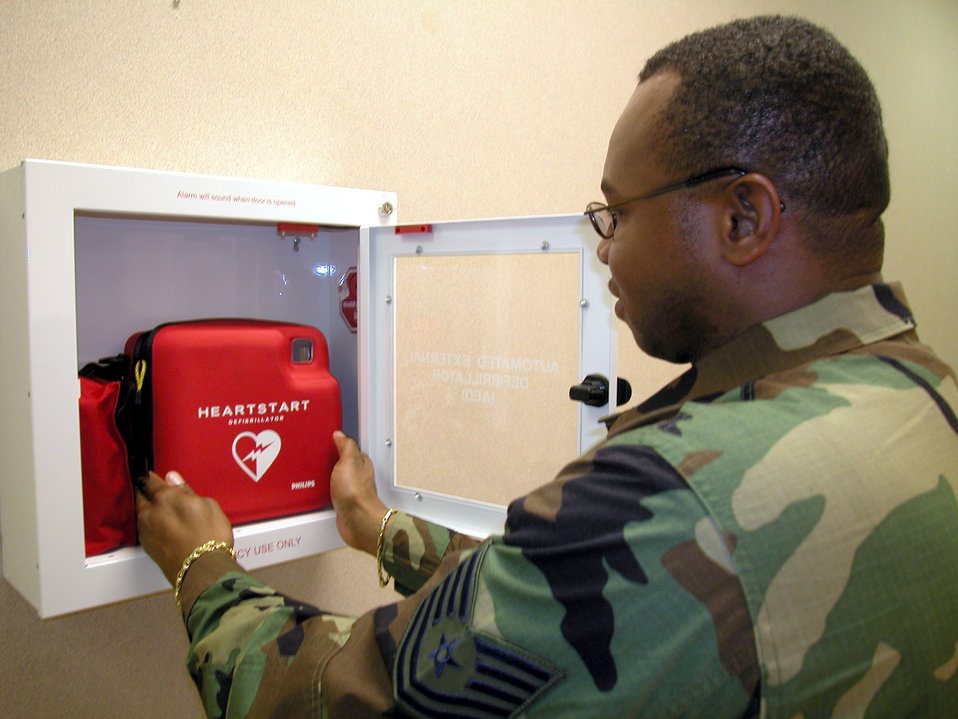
Defibrillator saves life

TINKER AIR FORCE BASE, Okla. -- Tech. Sgt. Marvin Lewis displays the automated external defibrillator that helped save Mario Martinez's life. Sergeant Lewis is a fitness and outdoor recreational instructor with the 72nd Services Division.